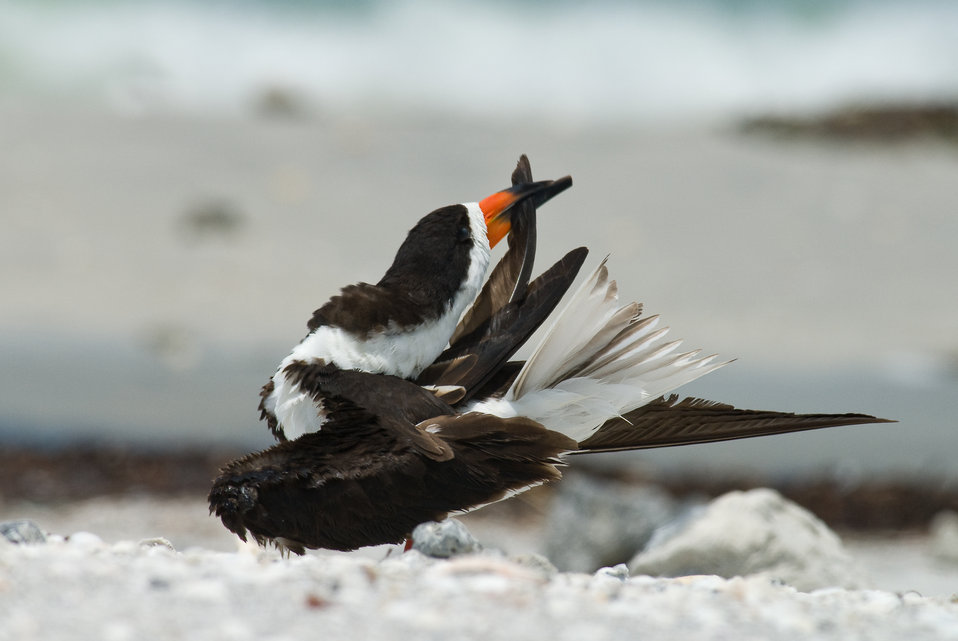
Black Skimmer

A black skimmers preens its feathers.